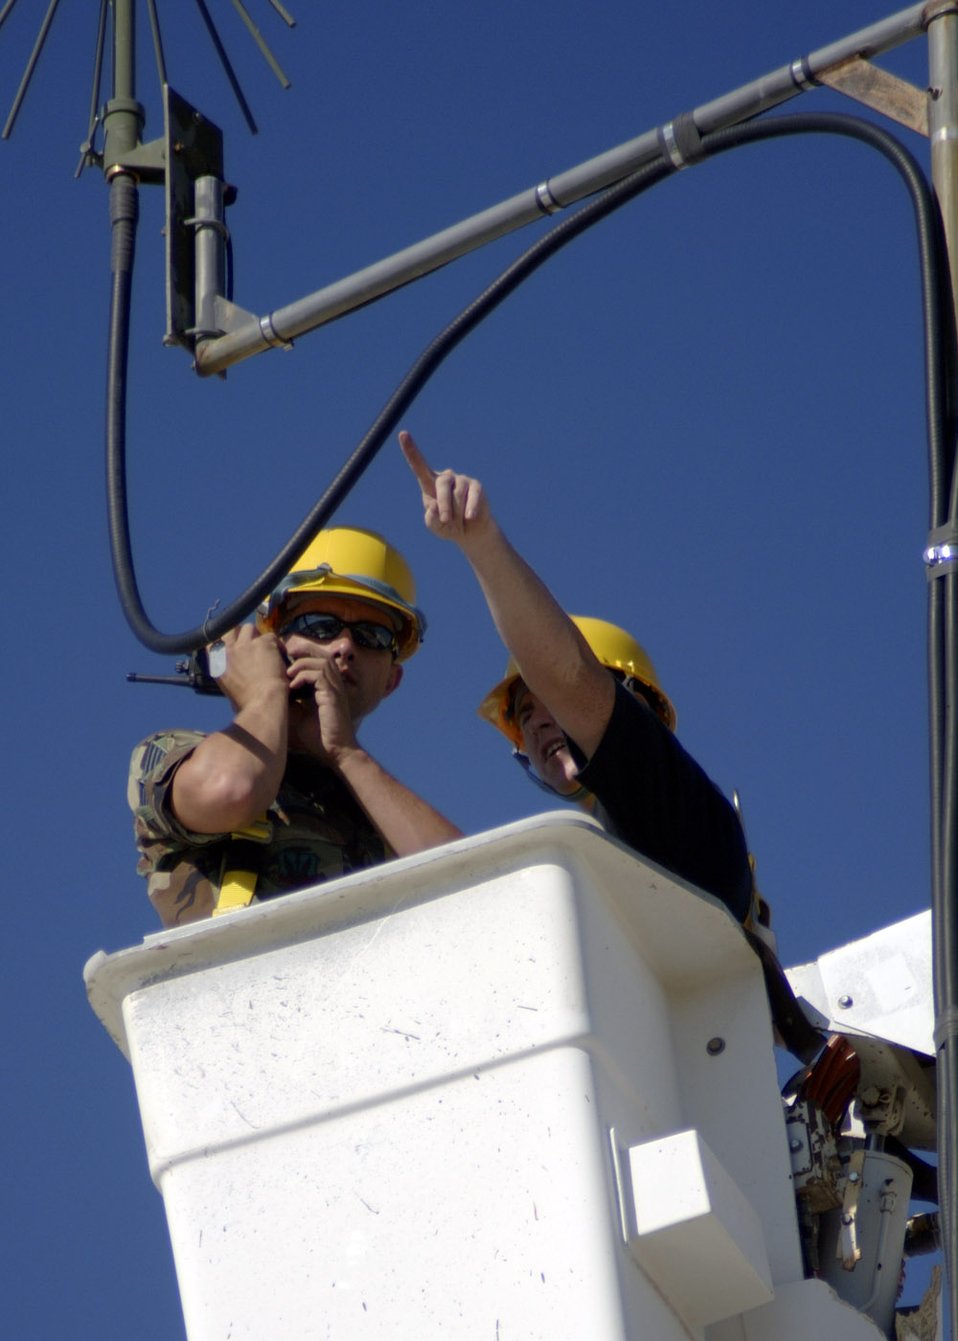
Checking it out

DAVIS-MONTHAN AIR FORCE BASE, Ariz. -- Staff Sgts. Jason Bulgin (left) and Albert Schariest verify the name of an antenna on a cable here. They are part of a team from the 1st Communications Squadron at Langley Air Force Base, Va., that visits here annually to inspect antenna arrays. The Airmen are cable/antenna maintainers.